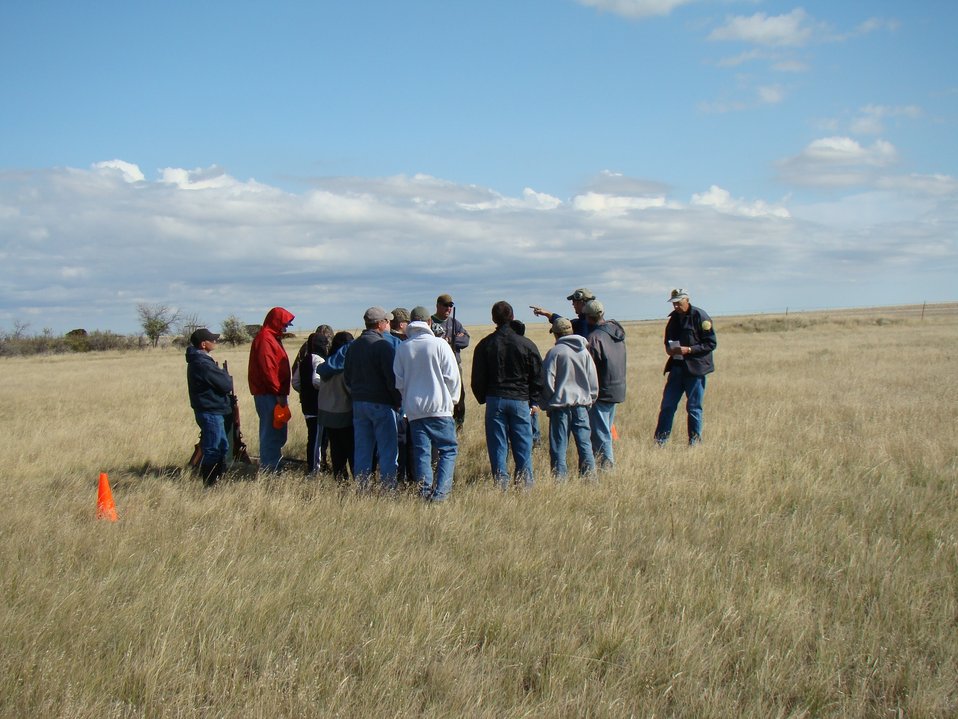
Benton Lake National Wildlife Refuge

Benton Lake NWR visitors take advantage of a youth waterfowl hunting clinic put on by Refuge staff, state of Montana wildlife officials, and other volunteers.